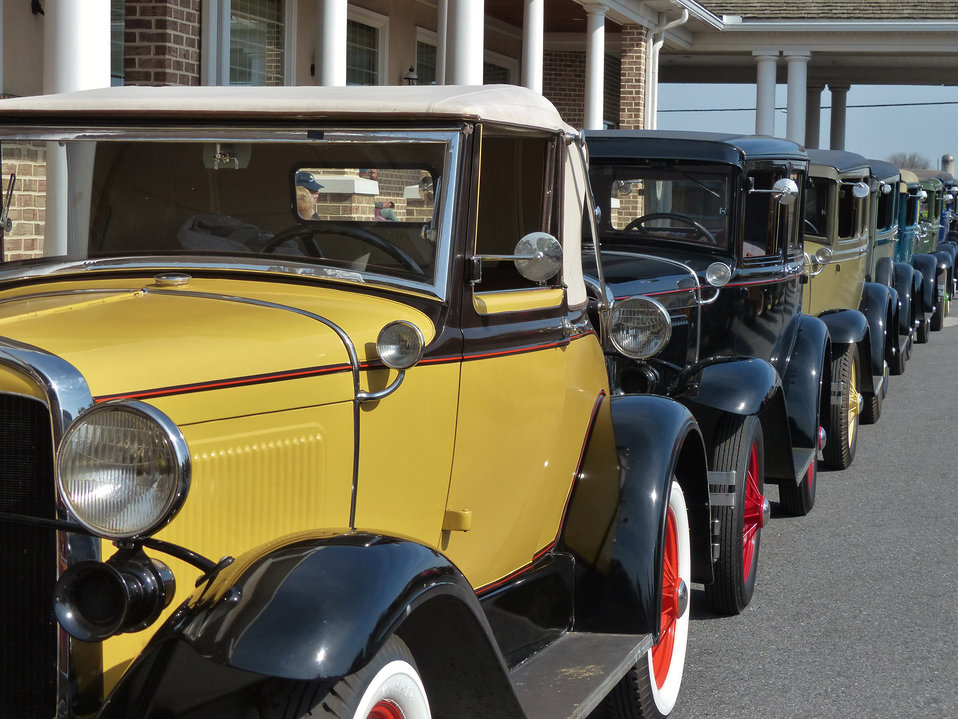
Model as -2

A line of ford model as.